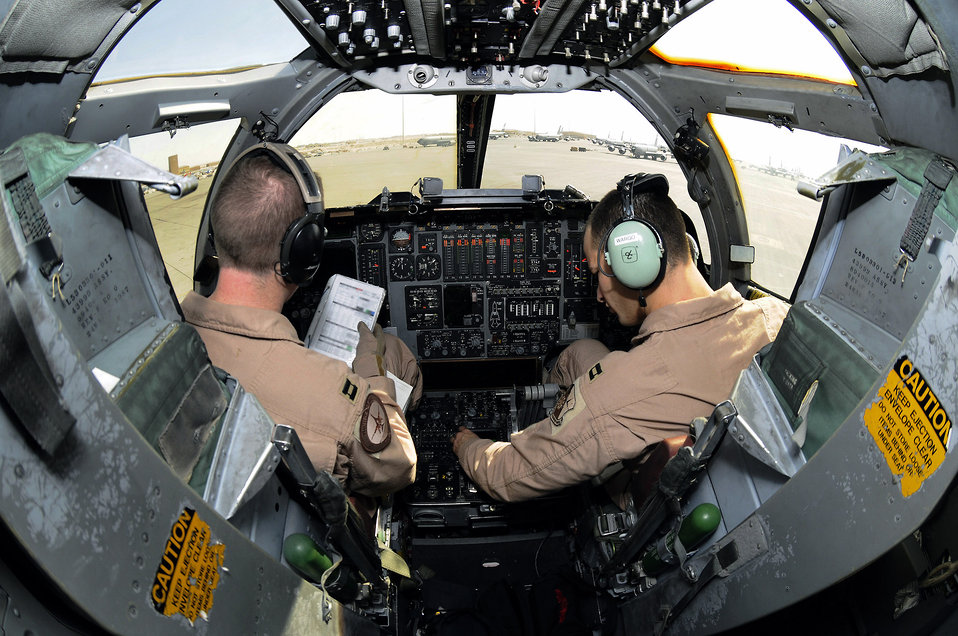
B-1B aircrews bring unique capabilities to the fight

Capt. Chad Hillen and Capt. Aaron Wargo work their way through preflight checklists from the cockpit of a B-1B Lancer Dec. 9 at an air base in Southwest Asia. Captain Hillen is a B-1B pilot and native of Sewell, N.J. Captain Wargo hails from Garden Grove, Calif. They are both pilots assigned to the 379th Expeditionary Bomb Squadron deployed from Ellsworth Air Force Base, S.D.